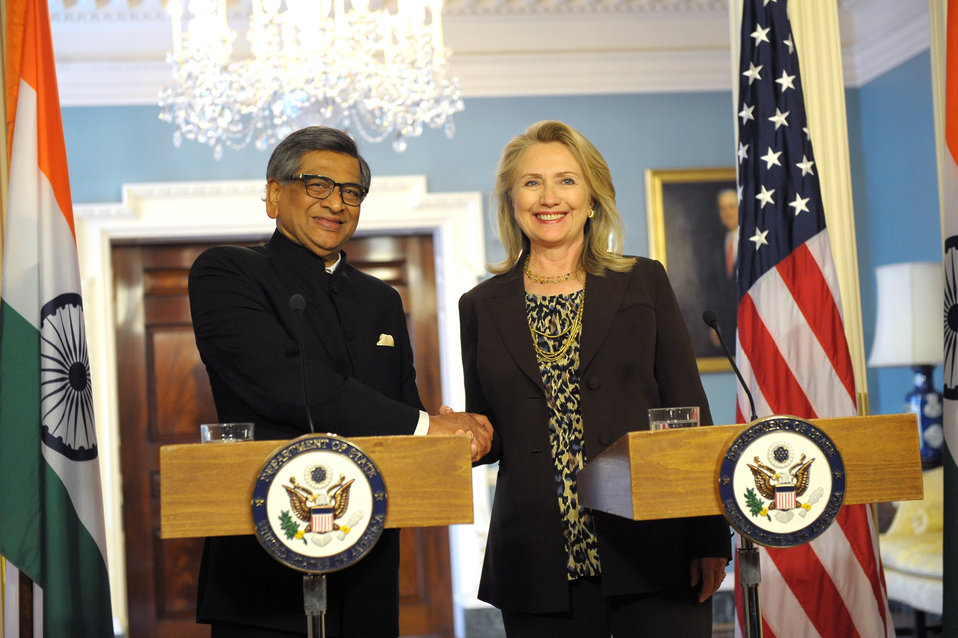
Secretary Clinton Delivers Remarks With Indian Foreign Minister Krishna

U.S. Secretary of State Hillary Rodham Clinton delivers remarks with Indian Foreign Minister S.M. Krishna at the U.S.-India Strategic Dialogue at the Department of State in Washington, D.C. on June 13, 2012.